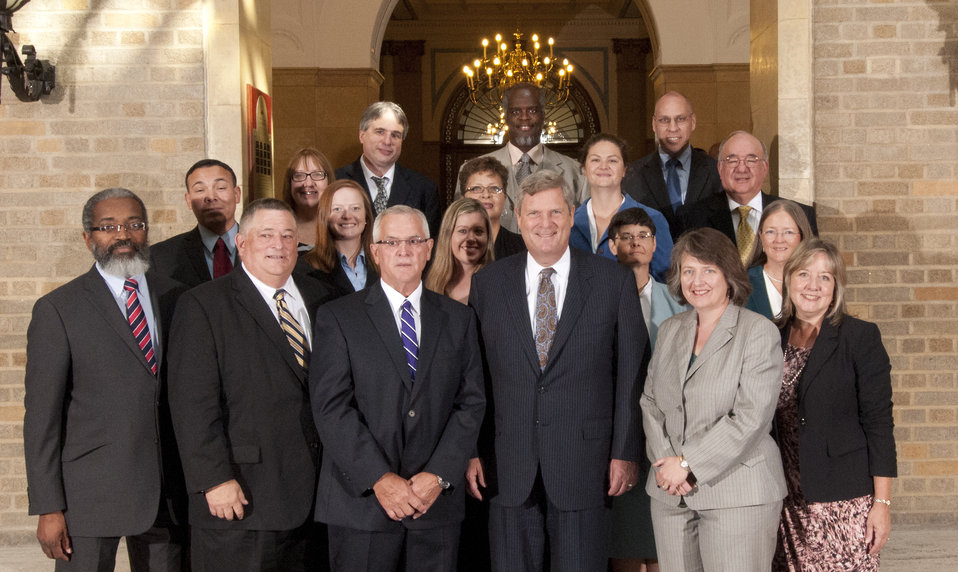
Agriculture Secretary Tom Vilsack and Deputy Agriculture Secretary Kathleen Merrigan with Animal Disease Traceability Team Animal and Plant Health Inspection Service (APHIS) Honor Award Group on the patio of the U.S. Department of Agriculture in Washington, D.C. on Wednesday, Sept. 12, 2012. The Animal Disease Traceability Team developed a flexible animal disease traceability system that encompasses exemplary stakeholder outreach and leverages the strengths of States, Tribes, and producers.